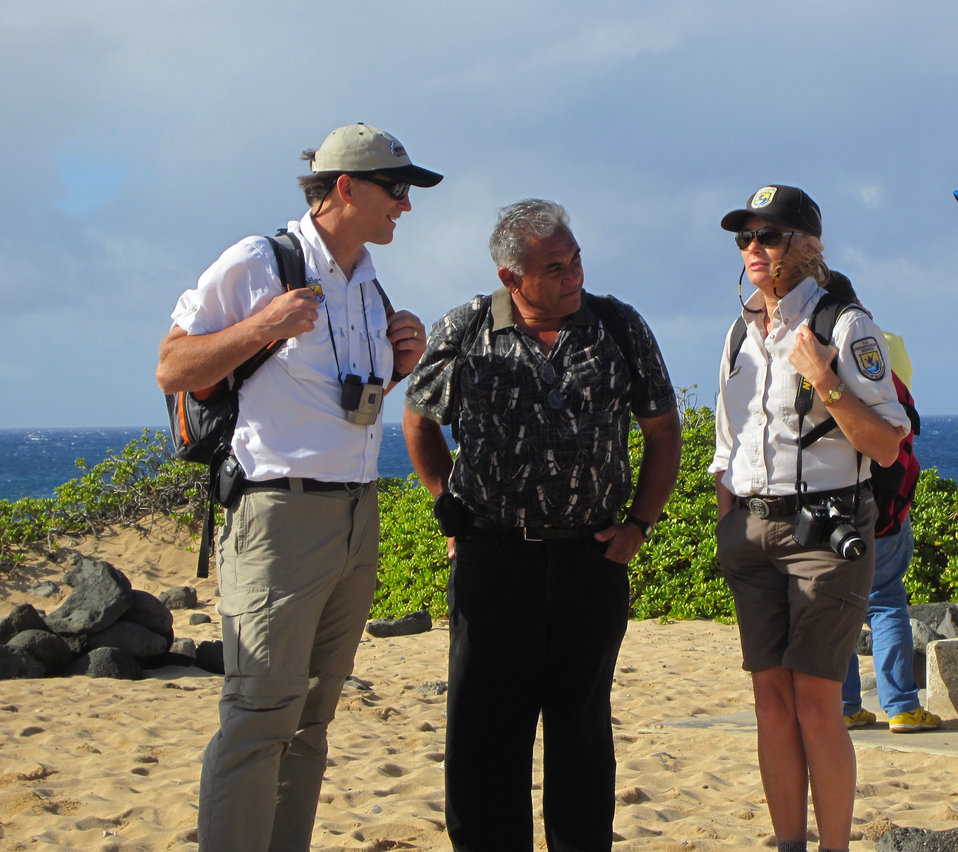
Dan Ashe In Hawaii

Dan looks over a joint rehabilitation project with William Aila, Director of the Hawaii Department of Lands and Natural Resources, and Susan White, Monuments Superintendent/Refuge Project Leader of the Pacific Reefs National Wildlife Refuge Complex.